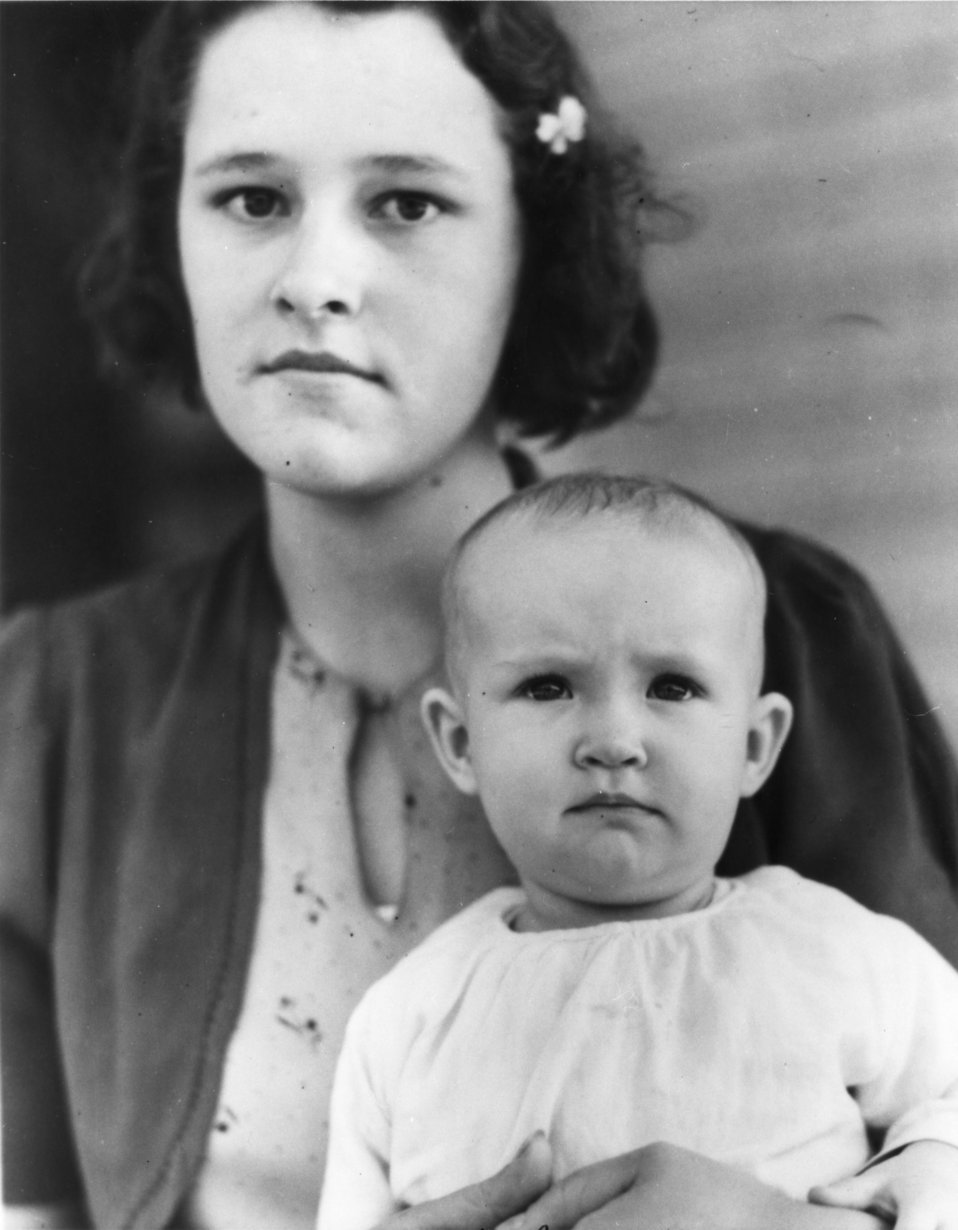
Early settlers at Oak Ridge